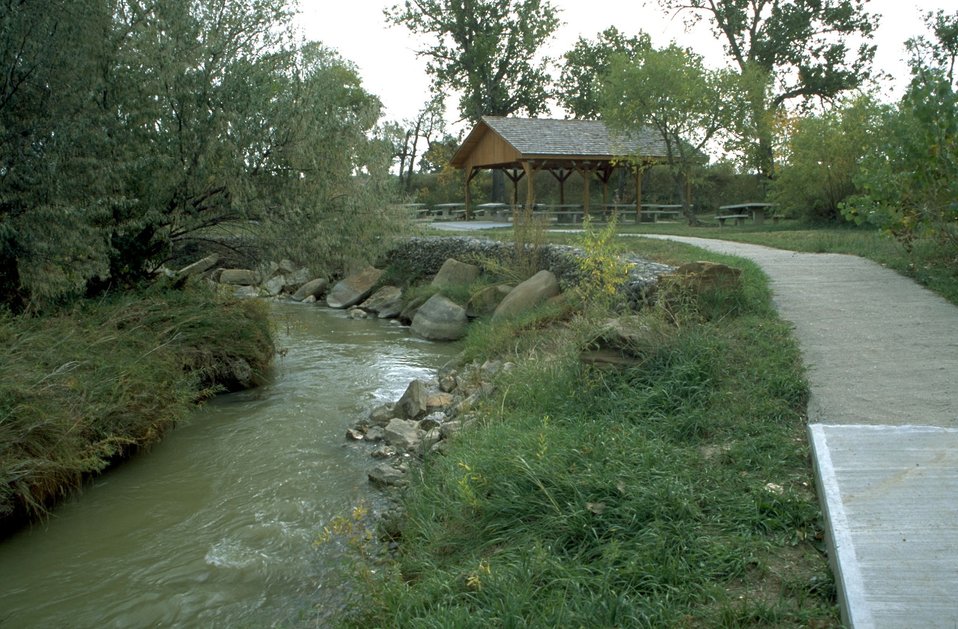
Jones Creek and Group Picnic Shelter at Matthews Receation Site